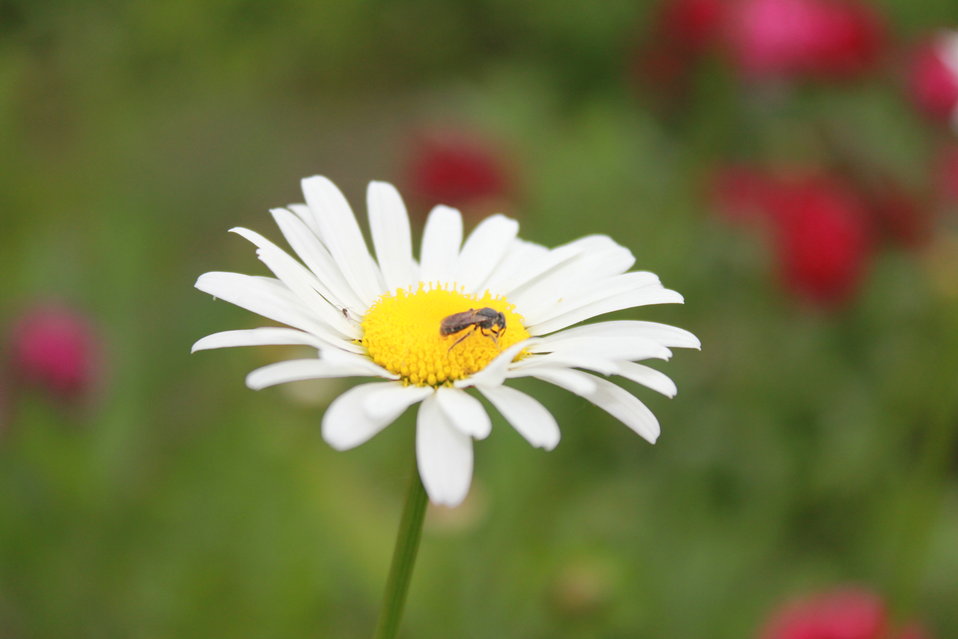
Pollinators in Hadley, MA.